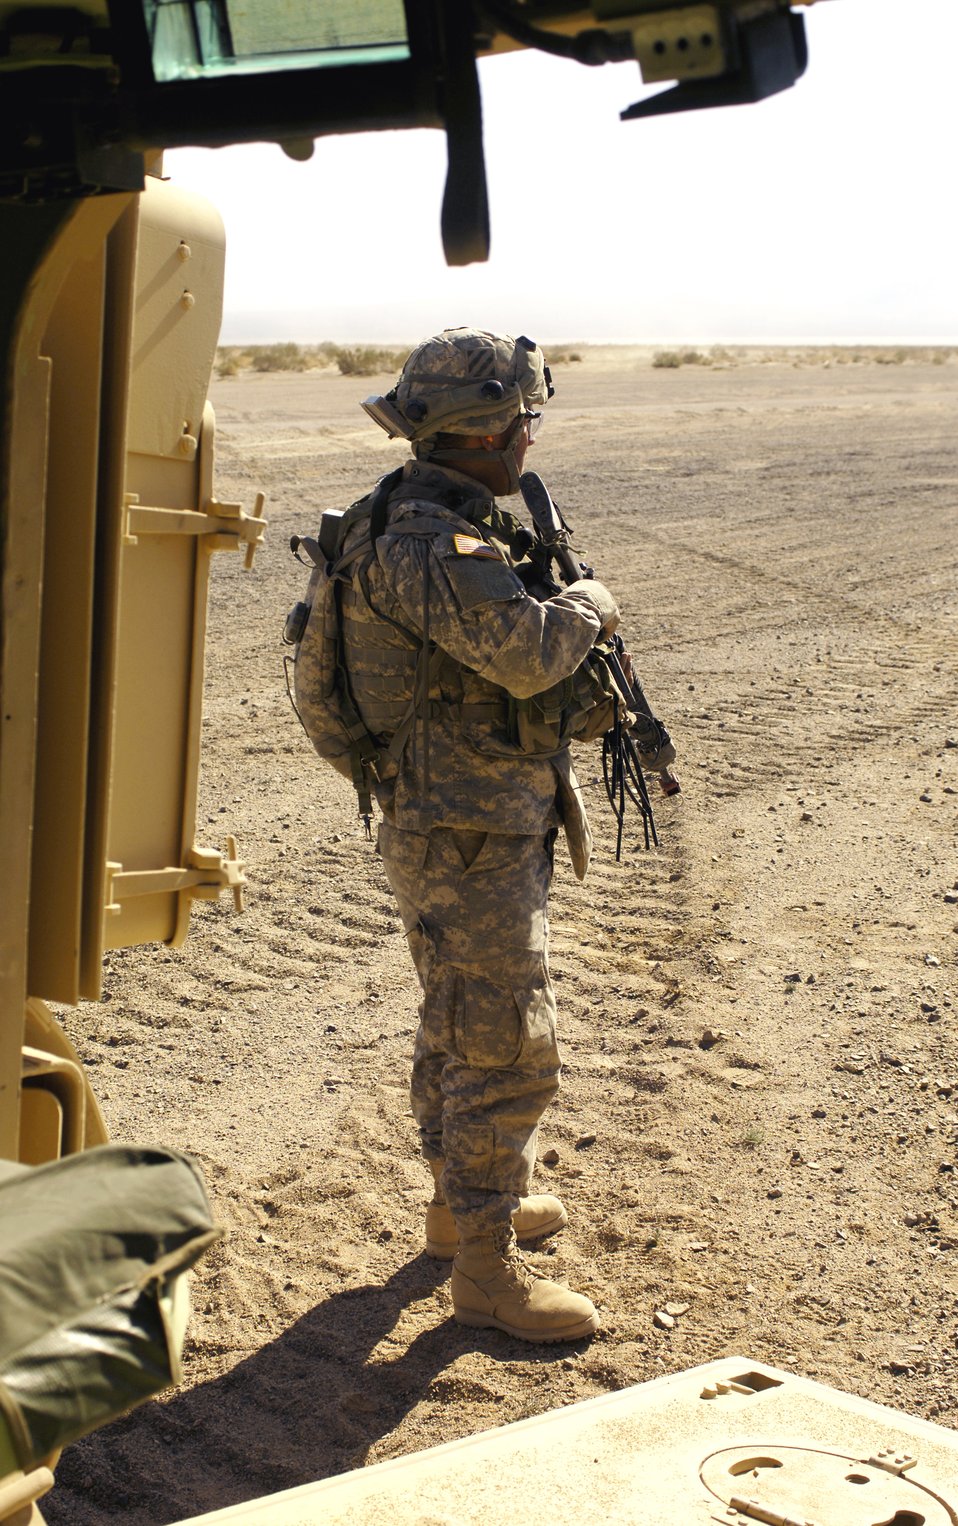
Airmen, Soldiers prepare for Iraq

A Soldier takes part in a route clearance training scenario Jan. 22 at the National Training Center at Fort Irwin, Calif. Both Army Soldiers and Airmen are trained in a number of different scenarios that will help better prepare themselves for Iraq. The Soldier is member of Echo Company, 2-69 Armor Battalion from Fort Benning, Ga.